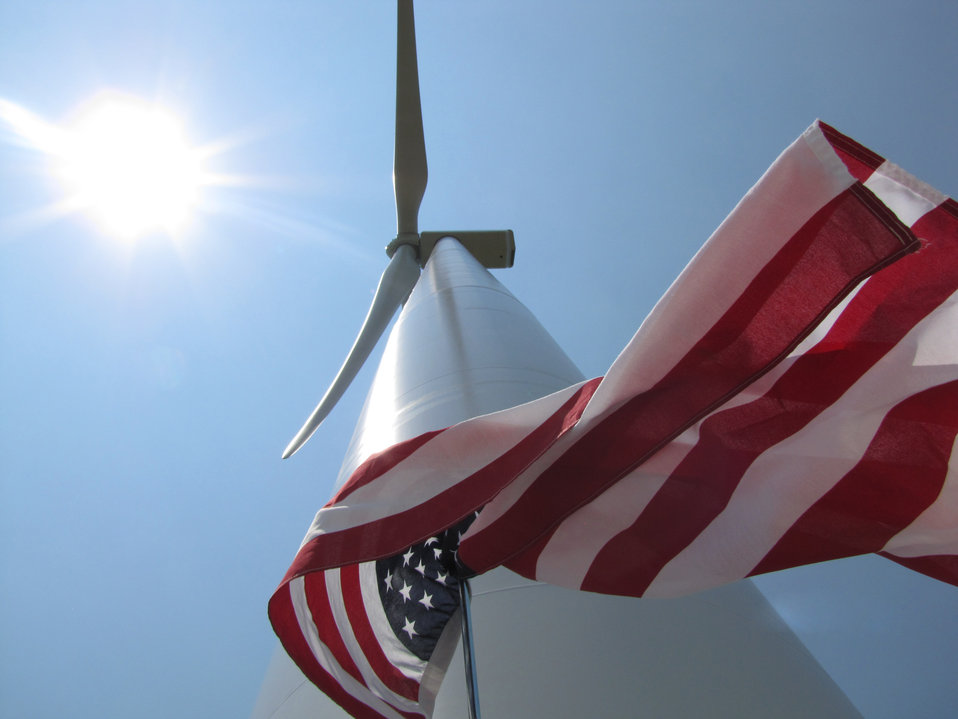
Sen Harkin Iowa Visit July 2 2

An American flag flies next to a new wind turbine Wiota, IA on July 2, 2012. The $3 million project required 22 local investors and a loan guarantee from U.S. Department of Agriculture’s (USDA Rural Development (RD) Rural Energy for America Program (REAP).